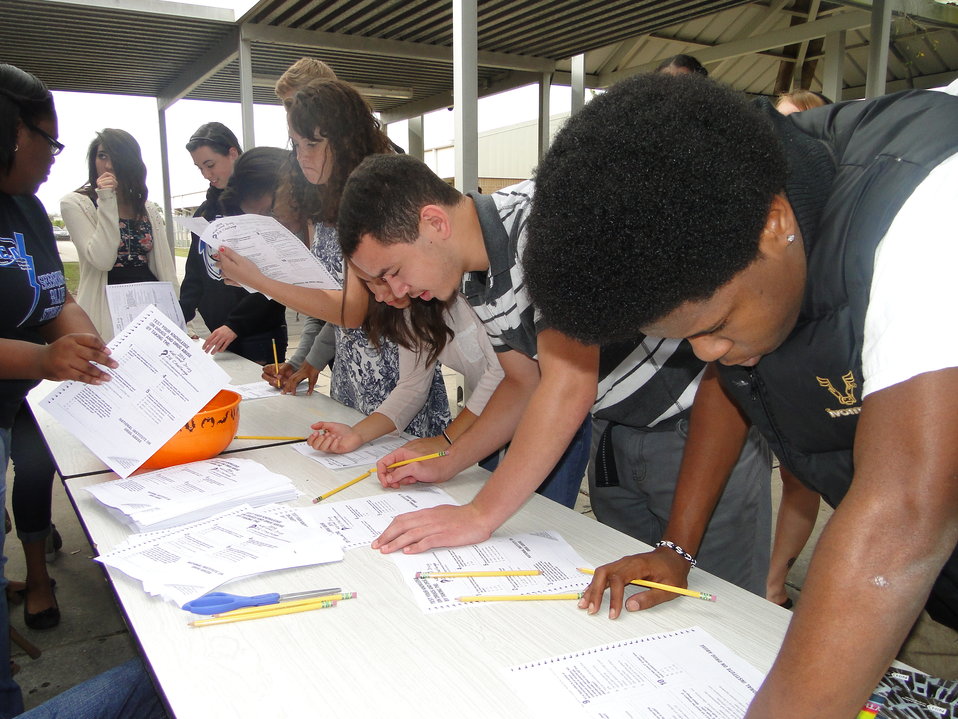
Sebring High School